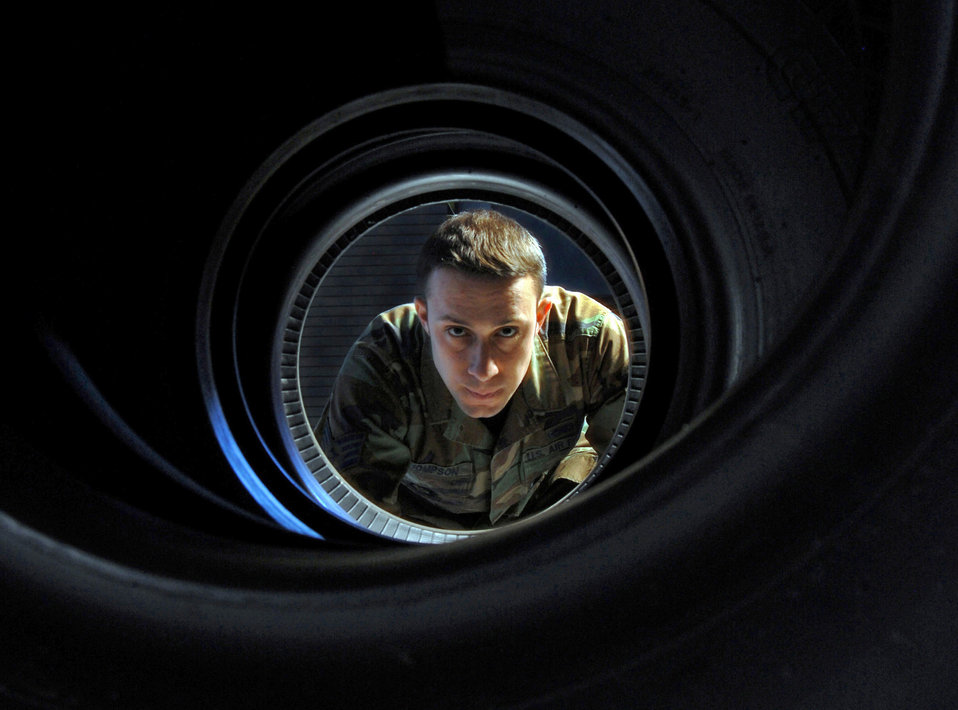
It's time to re-tire

Staff Sgt. Greg Thompson, an aircraft mechanic from the Aero Repair Shop at March Air Reserve Base, Calif., visually inspects the bead area inside a C-17 Globemaster III nose landing gear tire Feb. 3 that he is preparing to install.